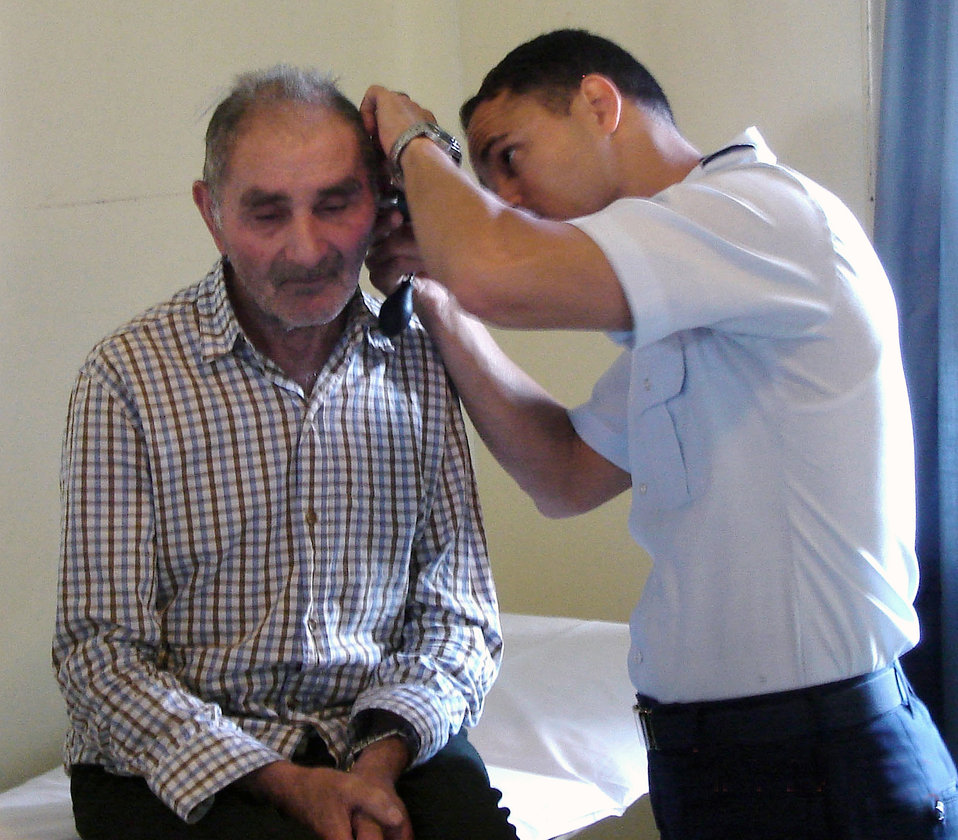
Med team trains with Chilean air force medics

Maj. (Dr.) Jose Barrera, an ear, nose and throat physician, examines a patient in the otolaryngology clinic at the Chile Chico hospital in the Patagonia region of Chile March 24. Major Barrera was part of a team of 11 Air Force medics from the 59th Medical Wing who participated in a medical readiness training exercise with 31 Chilean air force medics.